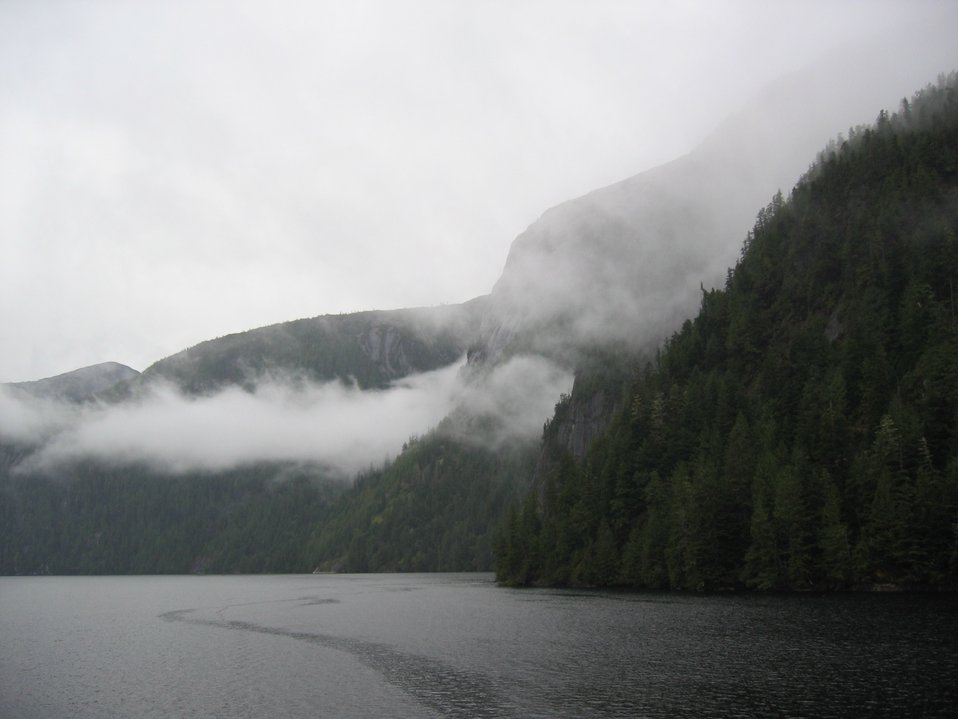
Where clouds become fog.